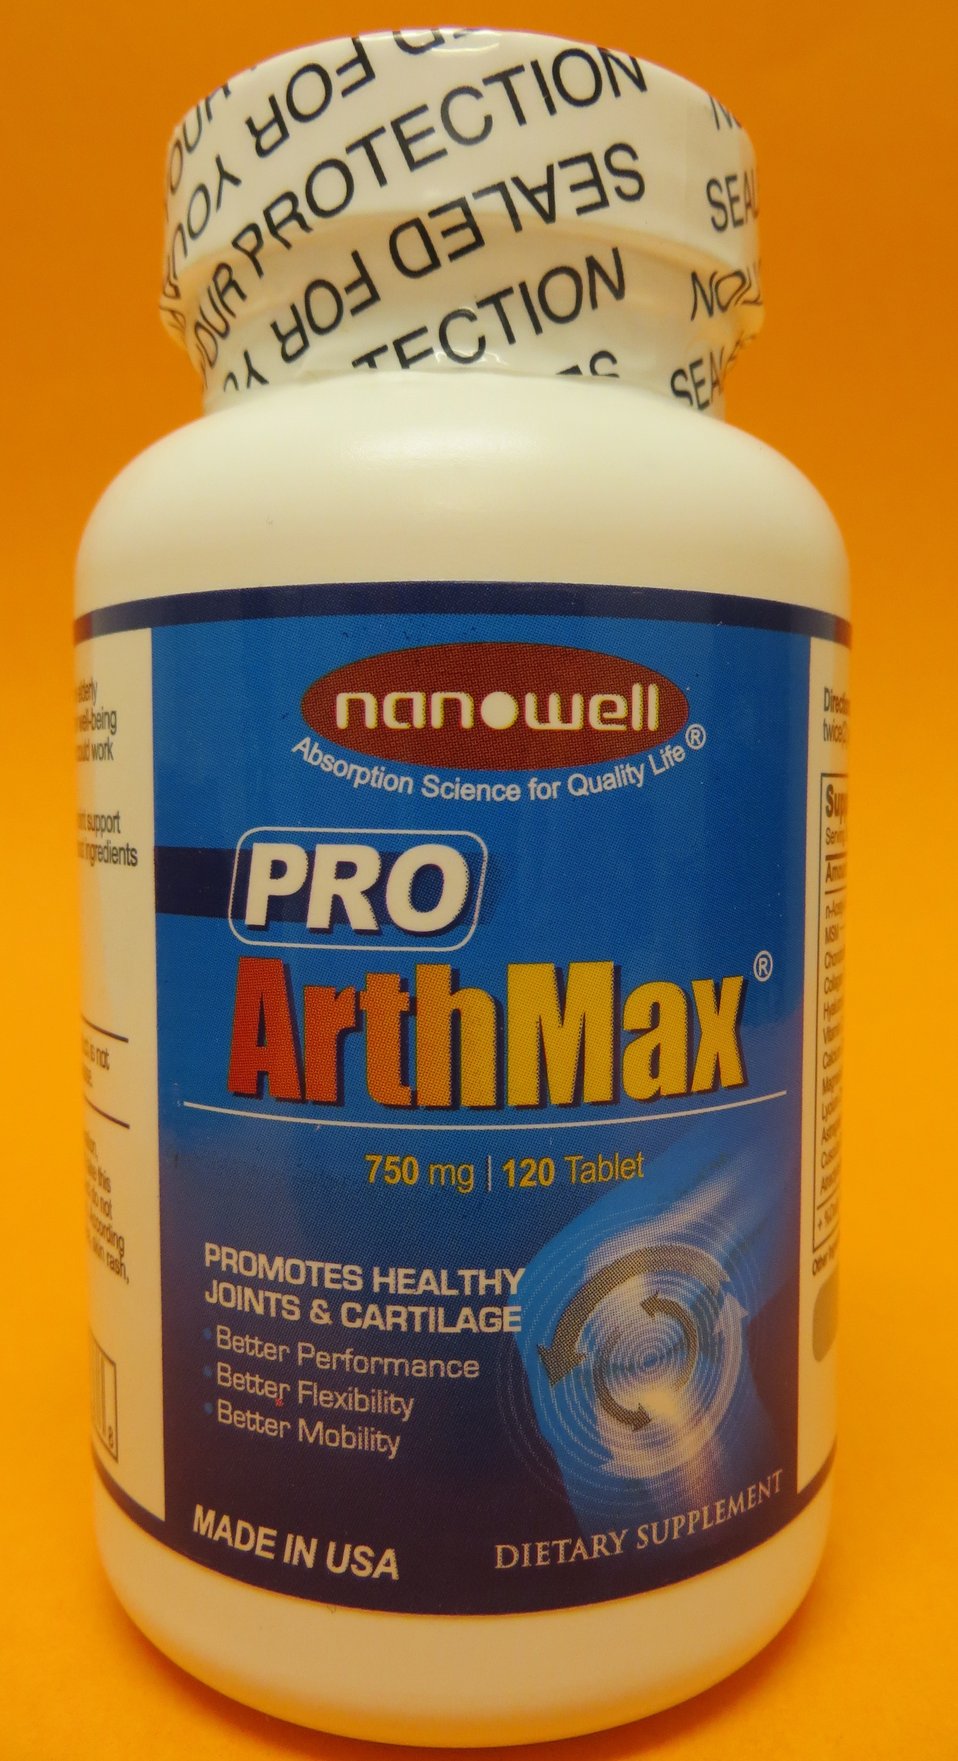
Pro ArthMax

January 13, 2014 - The FDA is advising consumers not to purchase or use 'Pro ArthMax,' a product promoted and sold for joint pain and arthritis. The product was found to contain undeclared chlorzoxazone, nefopam, diclofenac, ibuprofen, naproxen, and indomethacin. For more information, go to www.fda.gov/Safety/Recalls/ucm381494.htm

And read this Consumer Update: Beware of Fraudulent ‘Dietary Supplements’